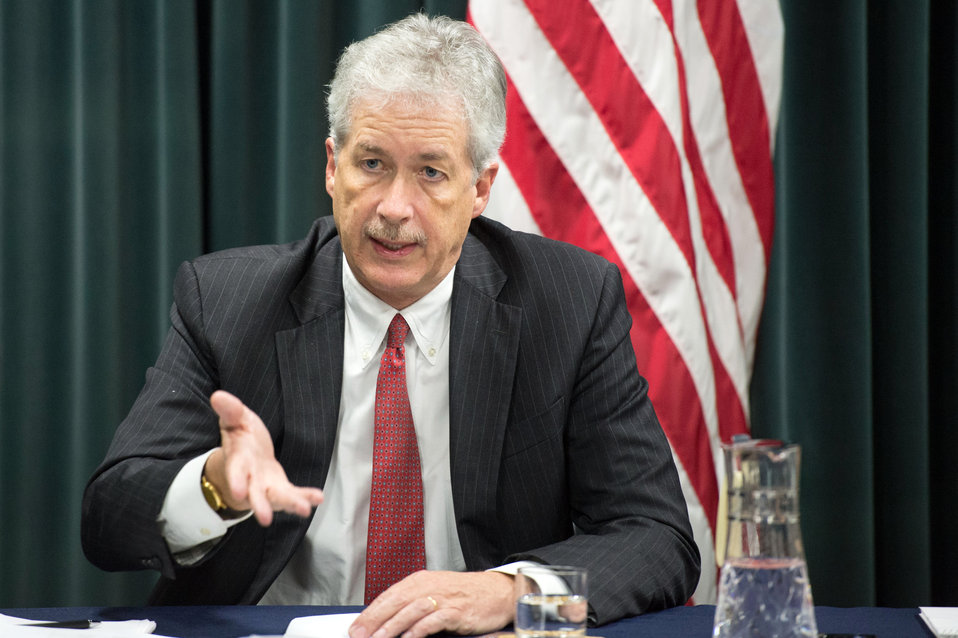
Deputy Secretary Addresses the Media in Tokyo

U.S. Deputy Secretary of State William J. Burns addresses the media during a roundtable discussion in Tokyo, Japan, on January 24, 2014.